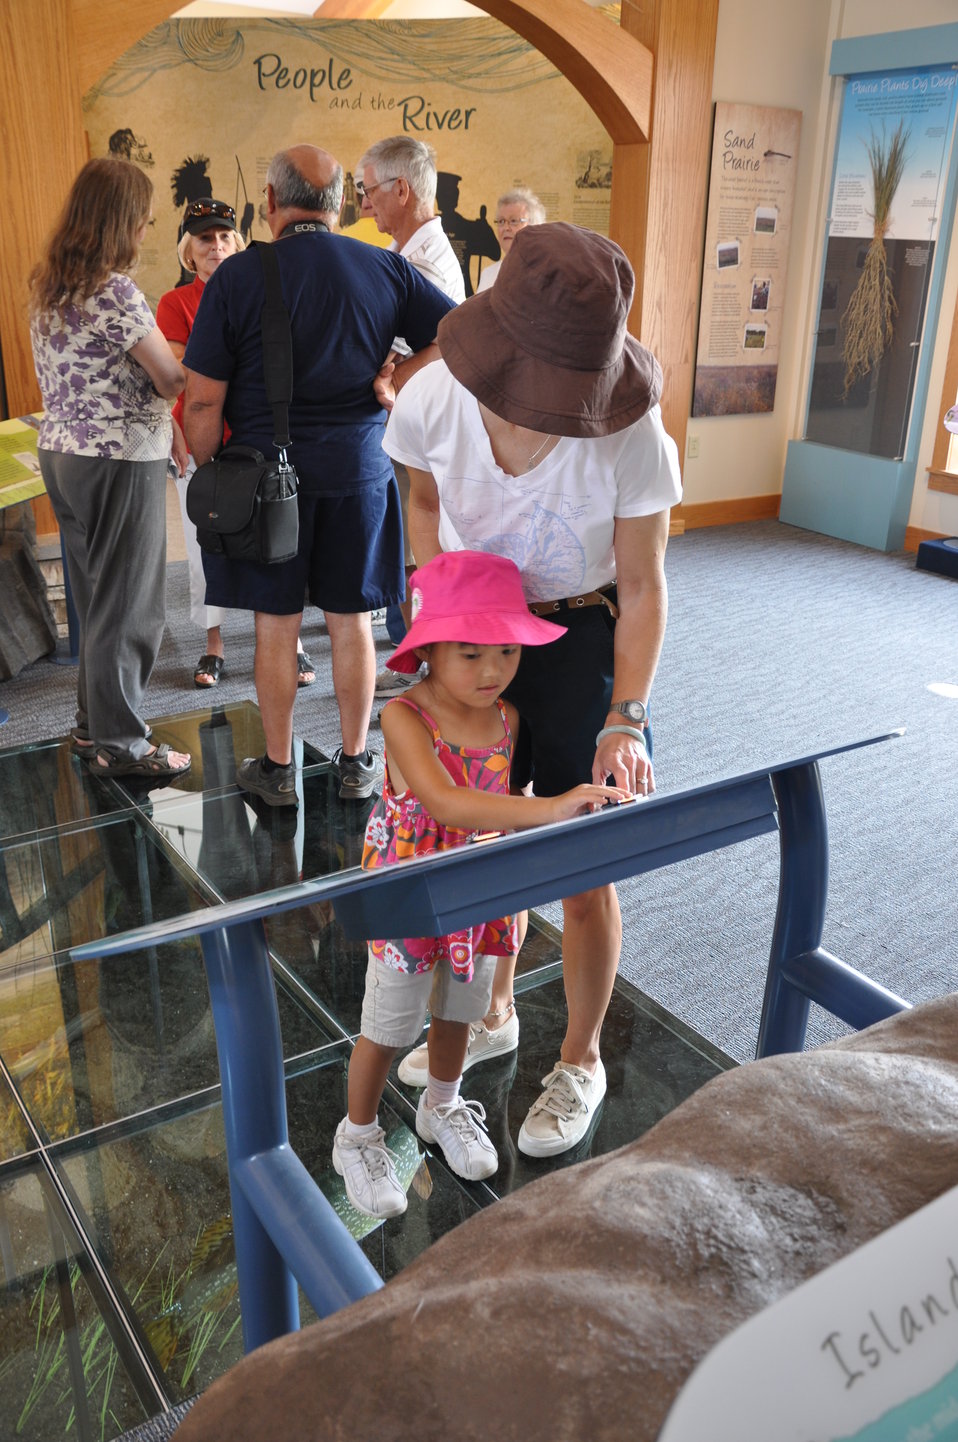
Exploring exhibits at La Crosse visitor center